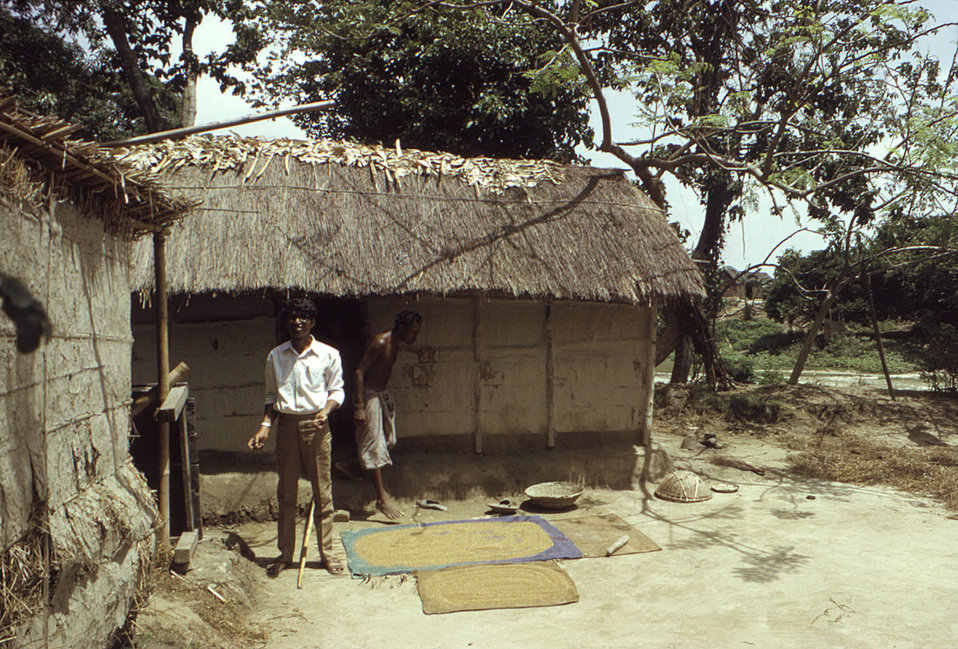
This 1974 photograph depicted two Bengali men who were inhabitants of a Bangladesh village. The picture was taken during the smallpox eradication efforts in that region, which helped to lead to the worldwide eradication of this dreaded illness.